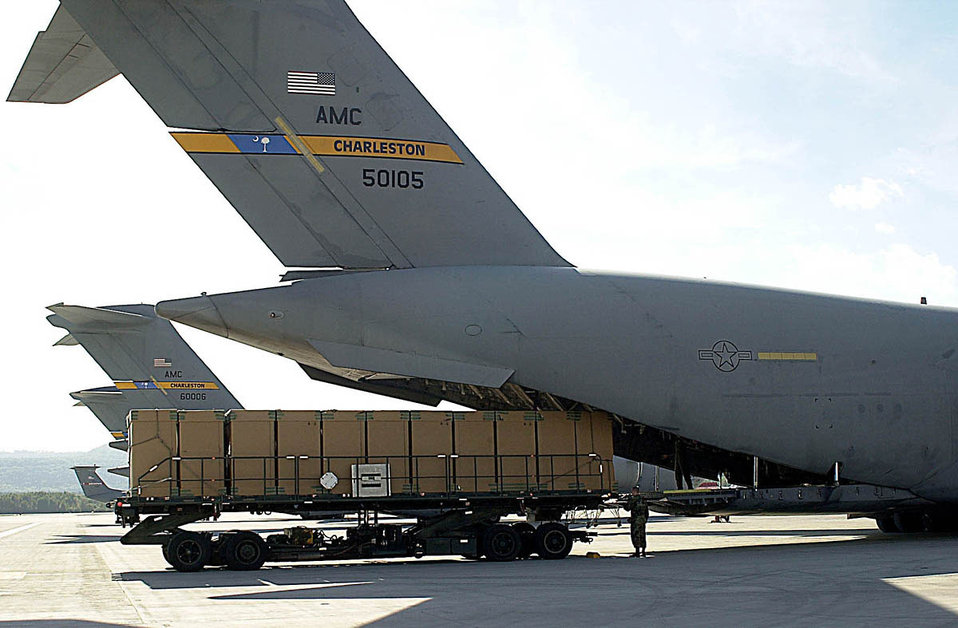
Loading a Globemaster

RAMSTEIN AIR BASE, Germany -- Aerial port troops load containers with humanitarian daily rations onboard a C-17 Globemaster III on Oct. 11. The humanitarian supplies are airdropped over Afghanistan as part of Operation Enduring Freedom.